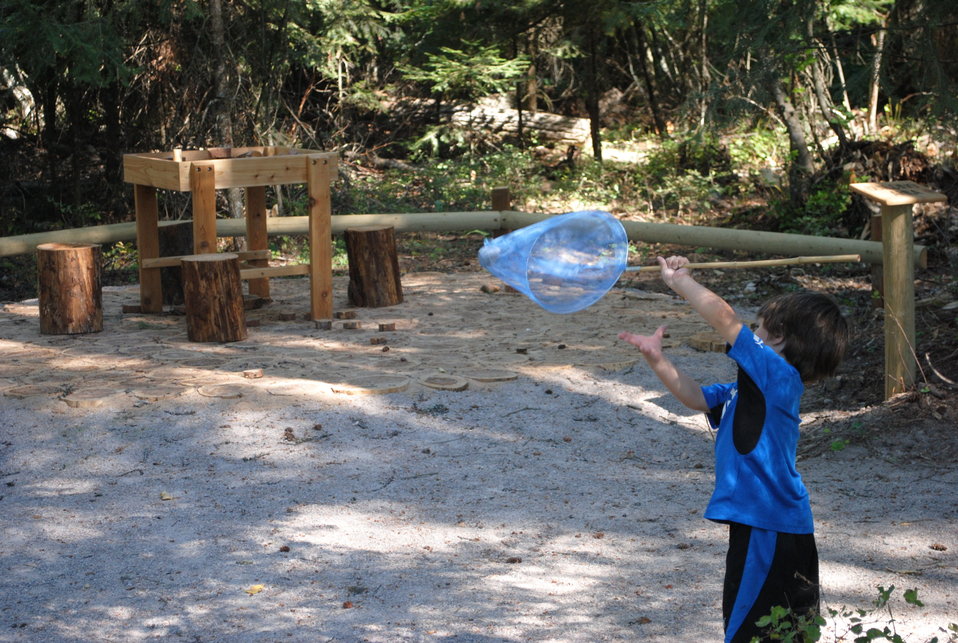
Creston National Fish Hatchery's Outdoor Classroom

A young child enjoys the new Outdoor Classroom at the Creston National Fish Hatchery.